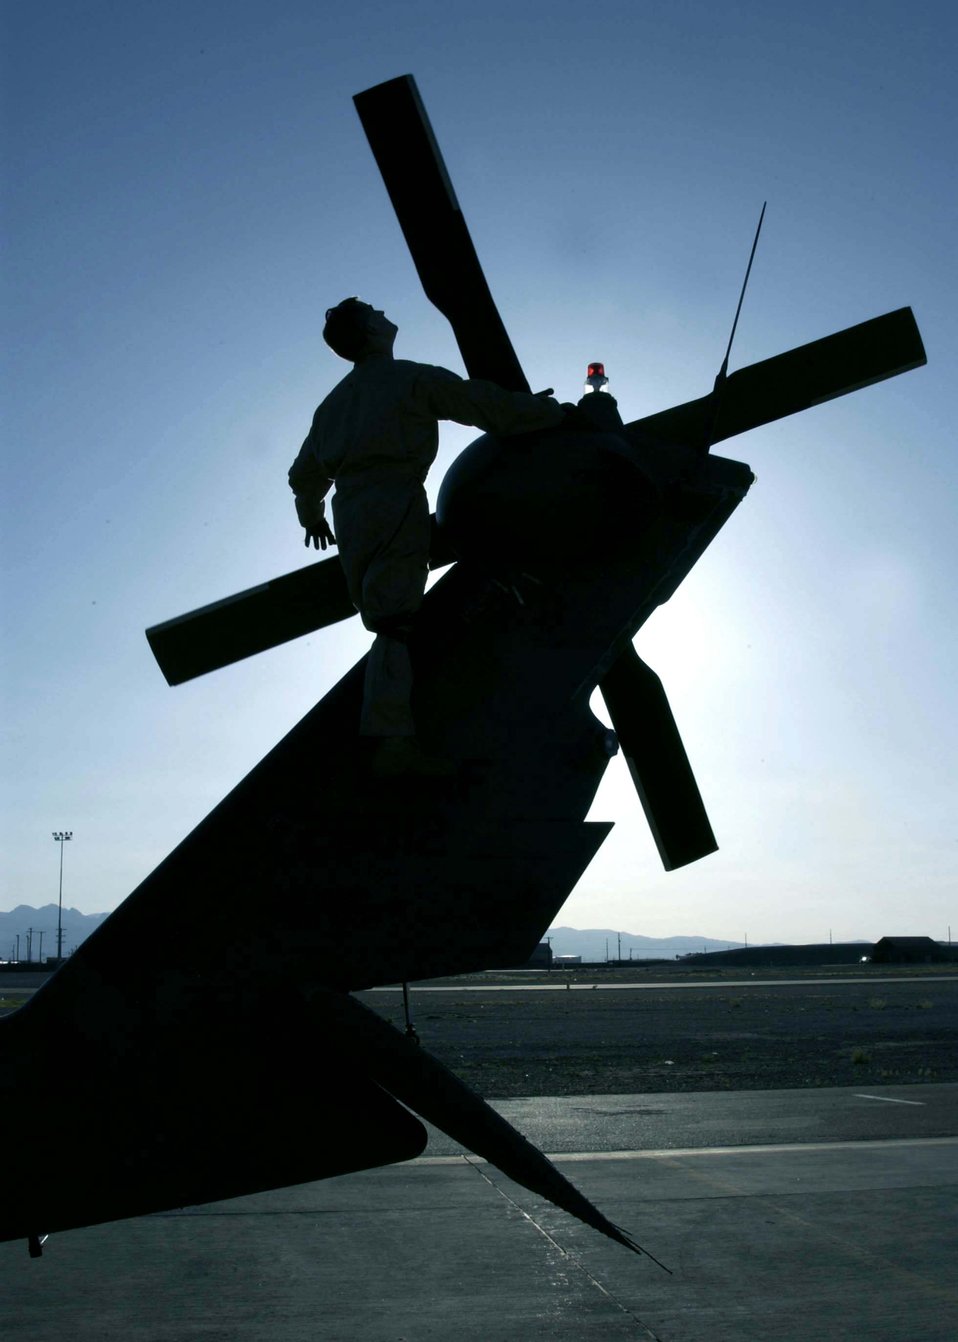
Get the rotors turning

NELLIS AIR FORCE BASE, Nev. -- Staff Sgt. Paul Gehrig checks the tail rotor on an HH-60G Pave Hawk helicopter before a training mission over the Nevada Test and Training Range near here May 16. Sergeant Gehrig is a flight engineer assigned to the 66th Rescue Squadron.